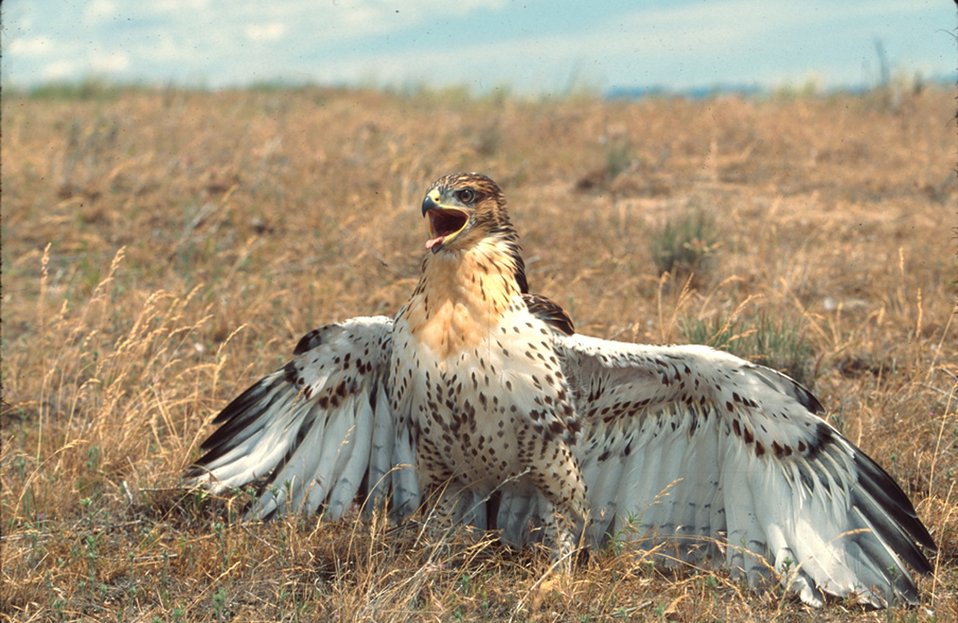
Juvenile Ferruginous Hawk Owyhee Field Office LSRD Lower Snake River District